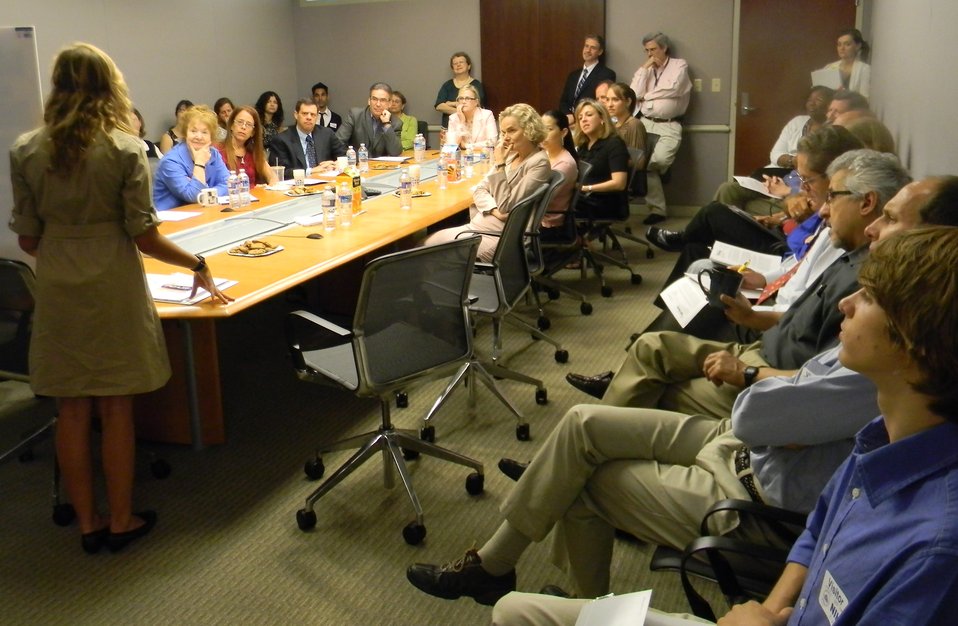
Schumacher presents

Darby Kathryn Schumacher, 2nd place winner of the 2011 Addiction Science Awards, presents her study to NIDA scientists